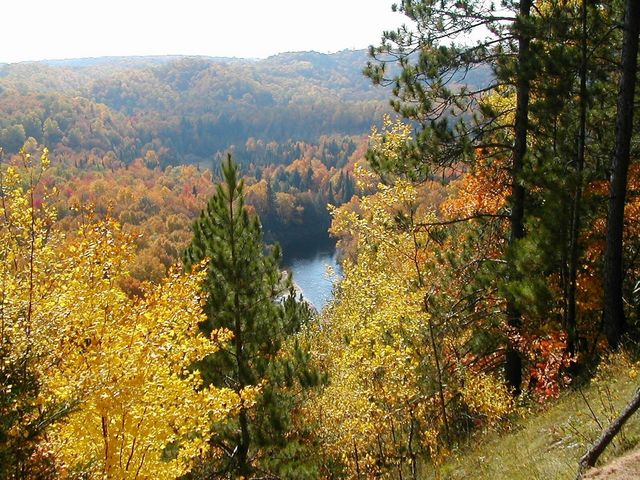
Overview of the Sturgeon River Gorge on the Ottawa National Forest in the Upper Peninsula of Michigan. The U.S. Forest Service (FS) has a Forest Service 2012 Fall Colors Website and a toll-free Fall Colors Hotline at 1-800-354-4595 that will help visitors plan their trip to catch the colors at their peaks.